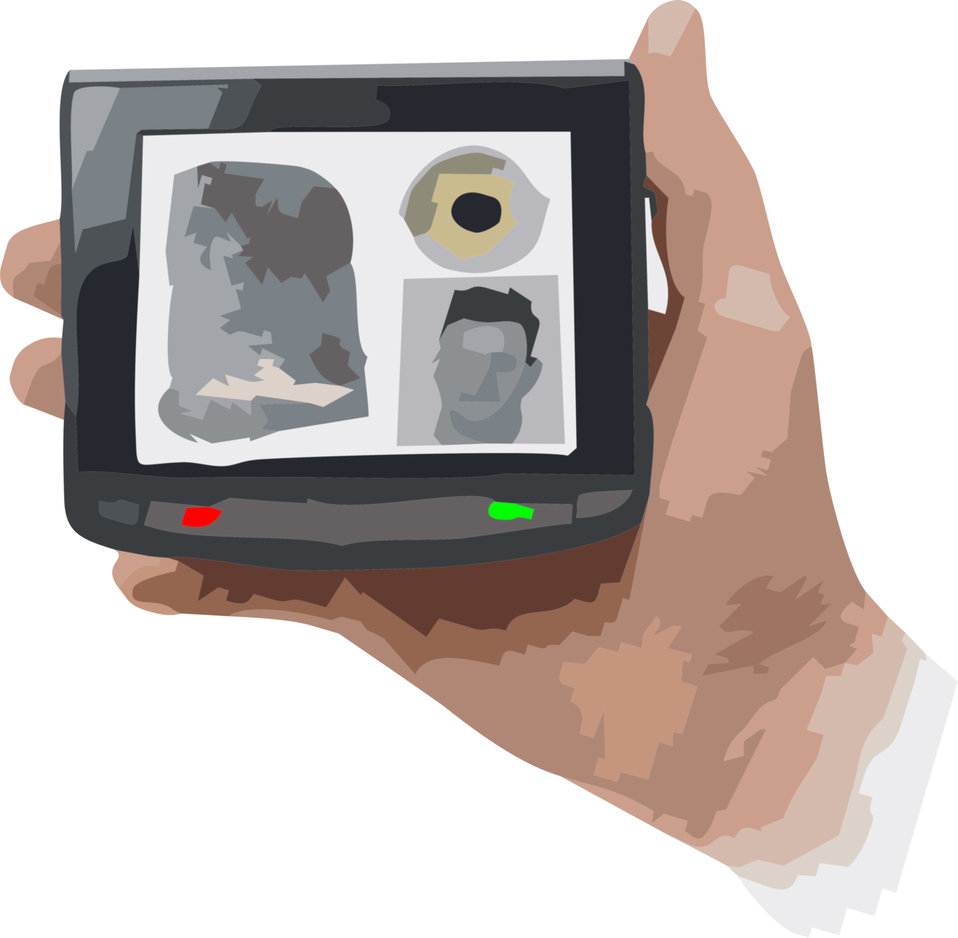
Mobile ID devices allow users in the field to collect biometrics and compare them with identity databases wirelessly.